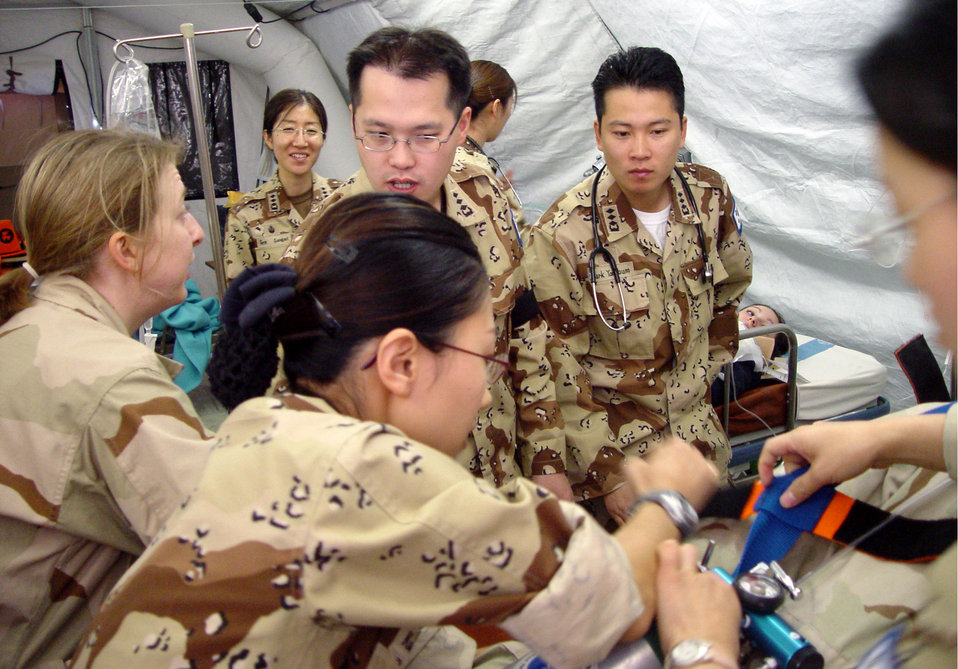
Combined effort for health care

MANAS AIR BASE, Kyrgyzstan -- Members of the 376th Expeditionary Medical Group and South Korea's 924th Medical Group work together on a simulated patient during an exercise at the hospital here.